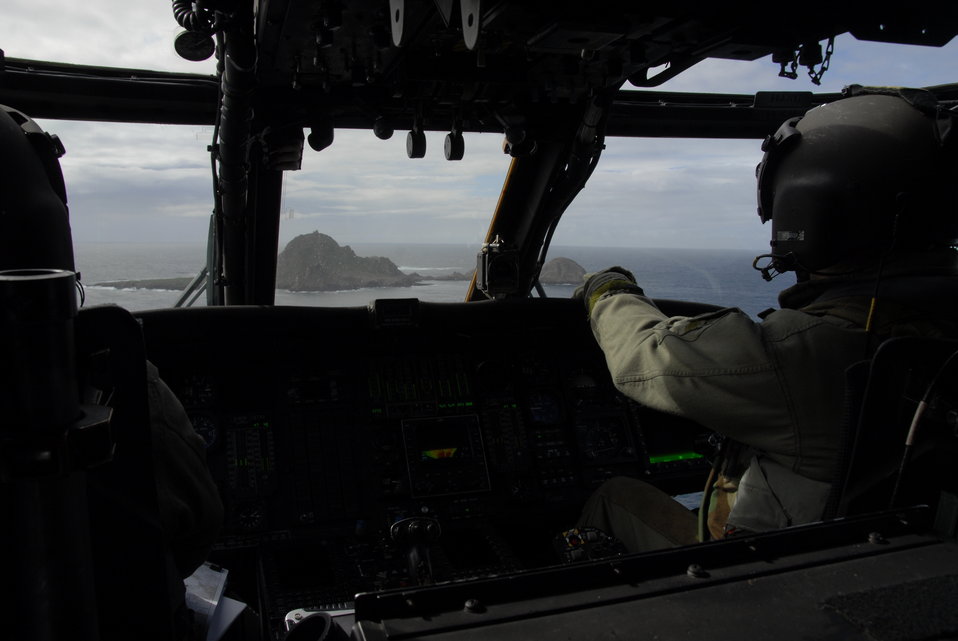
FARALLONS BATTERY MISSION

An HH-60G Pave Hawk helicopter aircrew from the California Air National Guard's 129th Rescue Wing at Moffett Federal Airfield, Calif., approaches Farallon Island Feb. 17 with a cargo of new photovoltaic batteries. The unit is supporting the U.S. Fish and Wildlife Service by transporting the batteries to power a lighthouse and workshop at the FWS research facility on the island, which sits some 30 miles west of San Francisco.